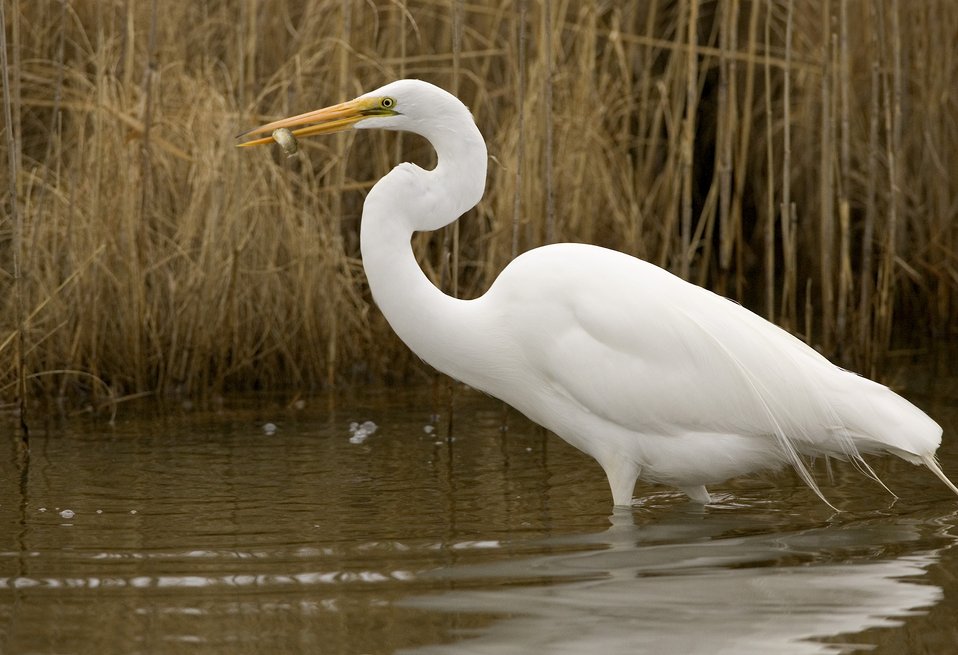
Photo of the Week - Great Egret at Chincoteague National Wildlife Refuge

Photo of the Week - 2/2/10

Great egret catches a fish at Chincoteague National Wildlife Refuge in Virginia